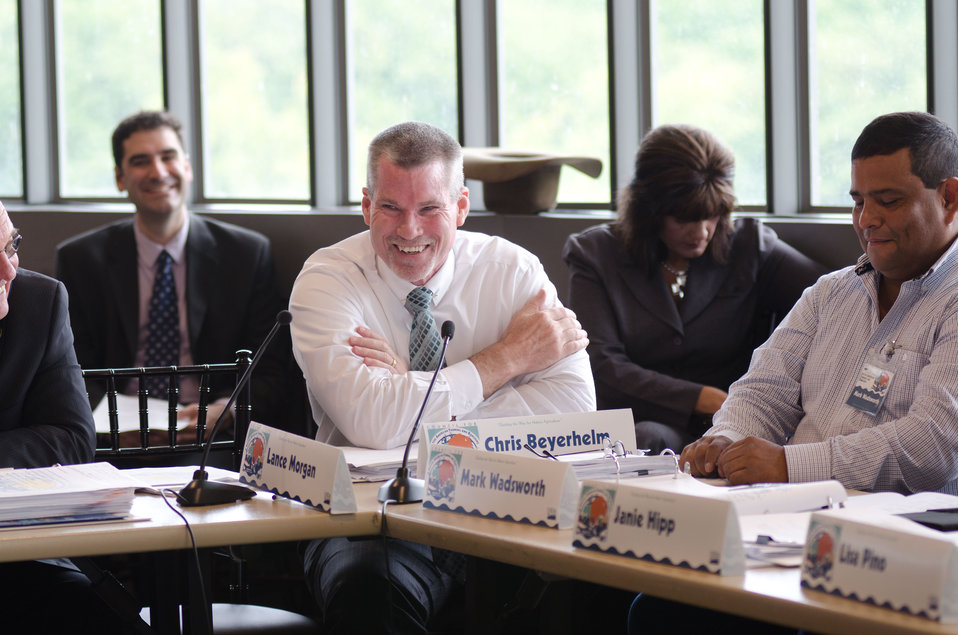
U.S. Department of Agriculture (USDA) Farm Service Agency (FSA) Deputy Administrator for Farm Loan Programs Chris Beyerhelm smiles at the first business meeting and public comment session of USDA's Council for Native American Farming and Ranching (CNAFR), held on Tuesday, Aug. 14, 2012 at the National Museum of the American Indian, in Washington, D.C. CNAFR was created to advise the Secretary on ways to eliminate barriers to participation for Native American Farmers and Ranchers in USDA programs. The Council was established as part of the Keepseagle settlement, and is conducted under the oversight of USDA's Office of Tribal Relations, which is part of the Office of the Secretary of Agriculture. The Director of Tribal Relations Joanna Mounce Stancil serves as Designated Federal Official (DFO) for the Council.